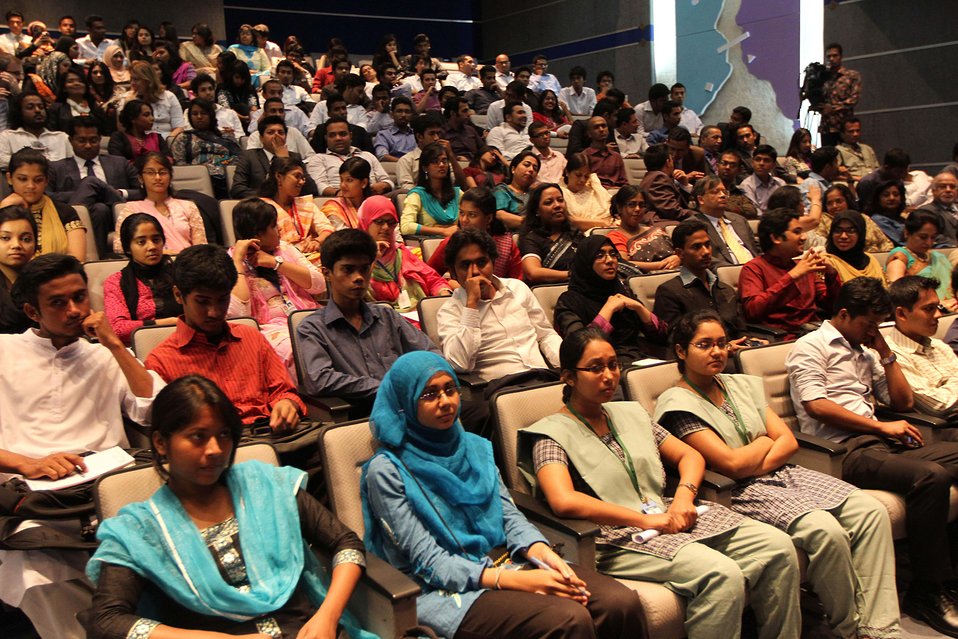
Bangladeshi Youth Participate in a Townterview With Secretary Clinton

Bangladeshi youth participate in a townterview with U.S. Secretary of State Hillary Rodham Clinton in Dhaka, Bangladesh, on May 6, 2012.